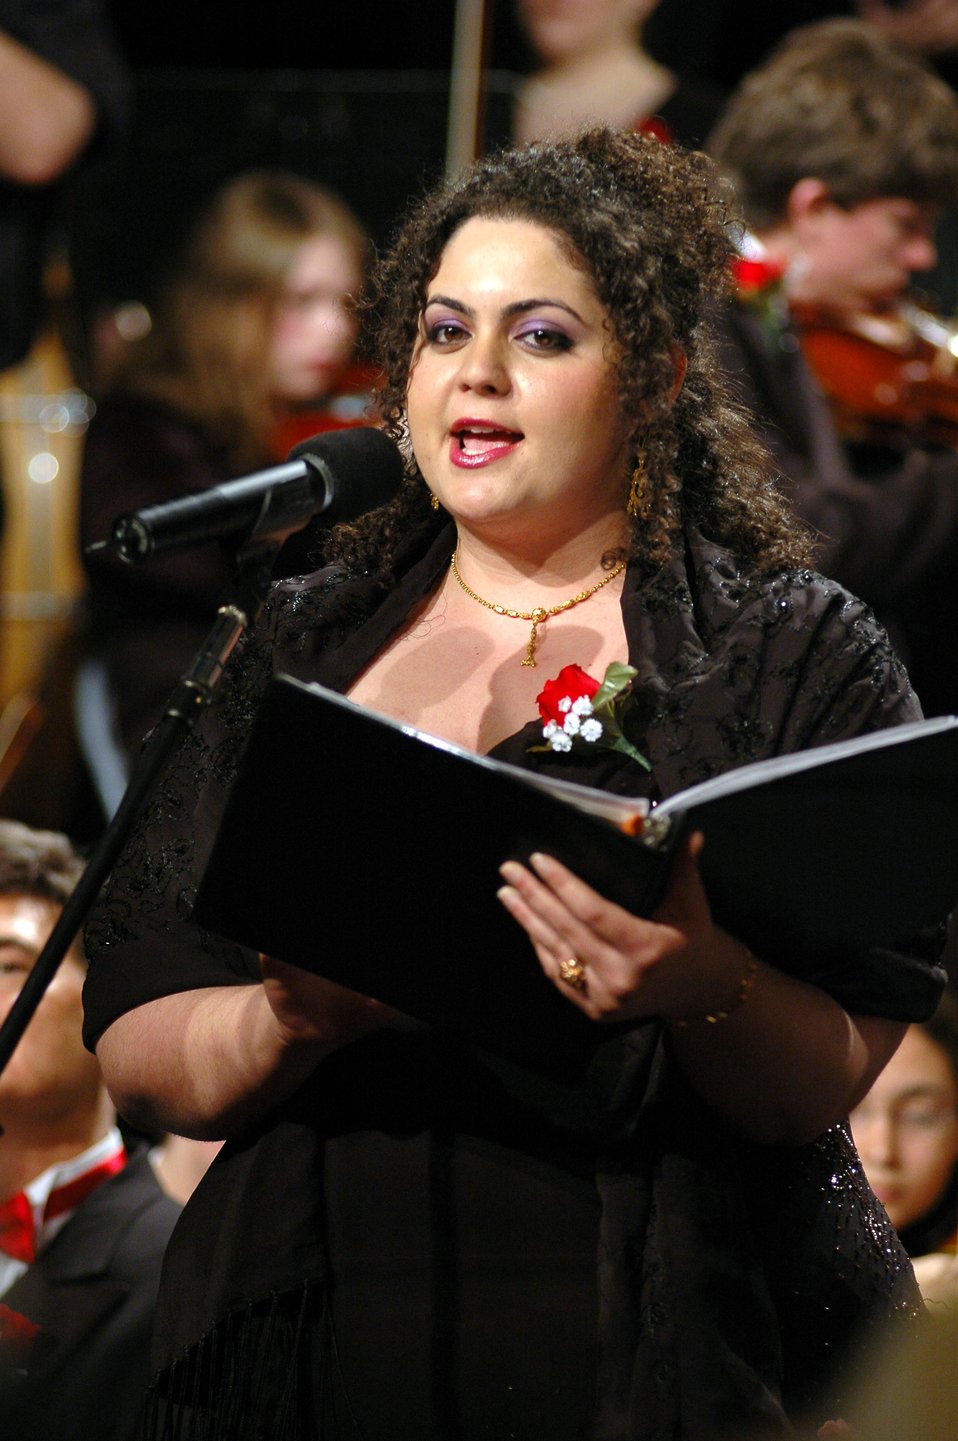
Tribute to the troops

WASHINGTON (AFPN) -- Susan Joy Bishai sings the